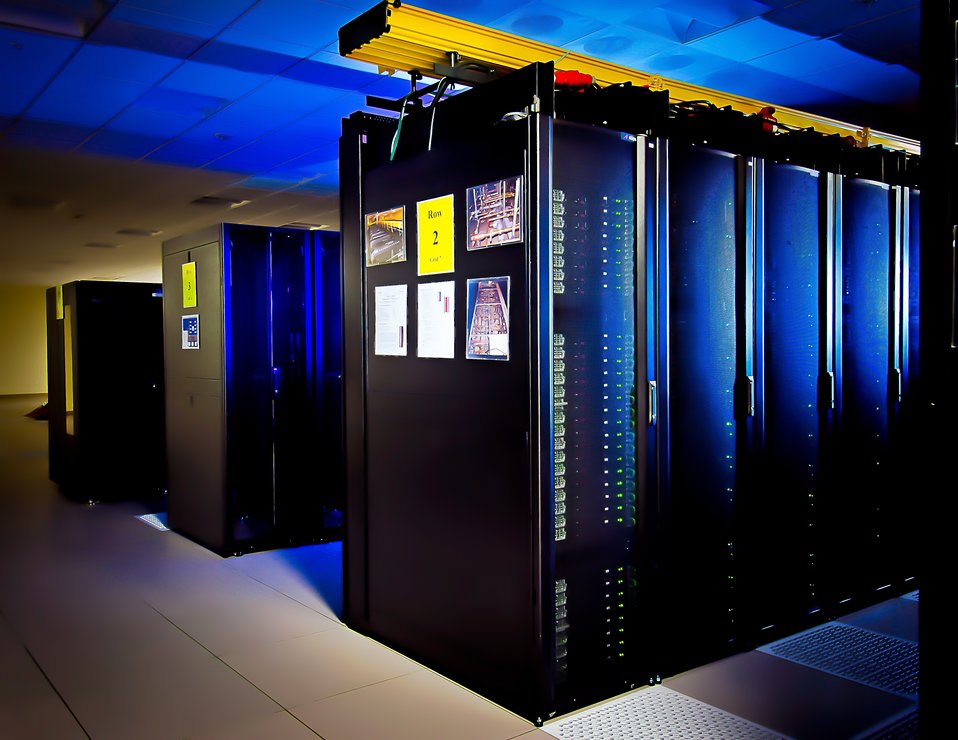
Olympus, the new theoretical 162-teraflop peak supercomputer at Pacific Northwest National Laboratory, is helping scientists do more complex, advanced research in areas as climate science and smart grid development.